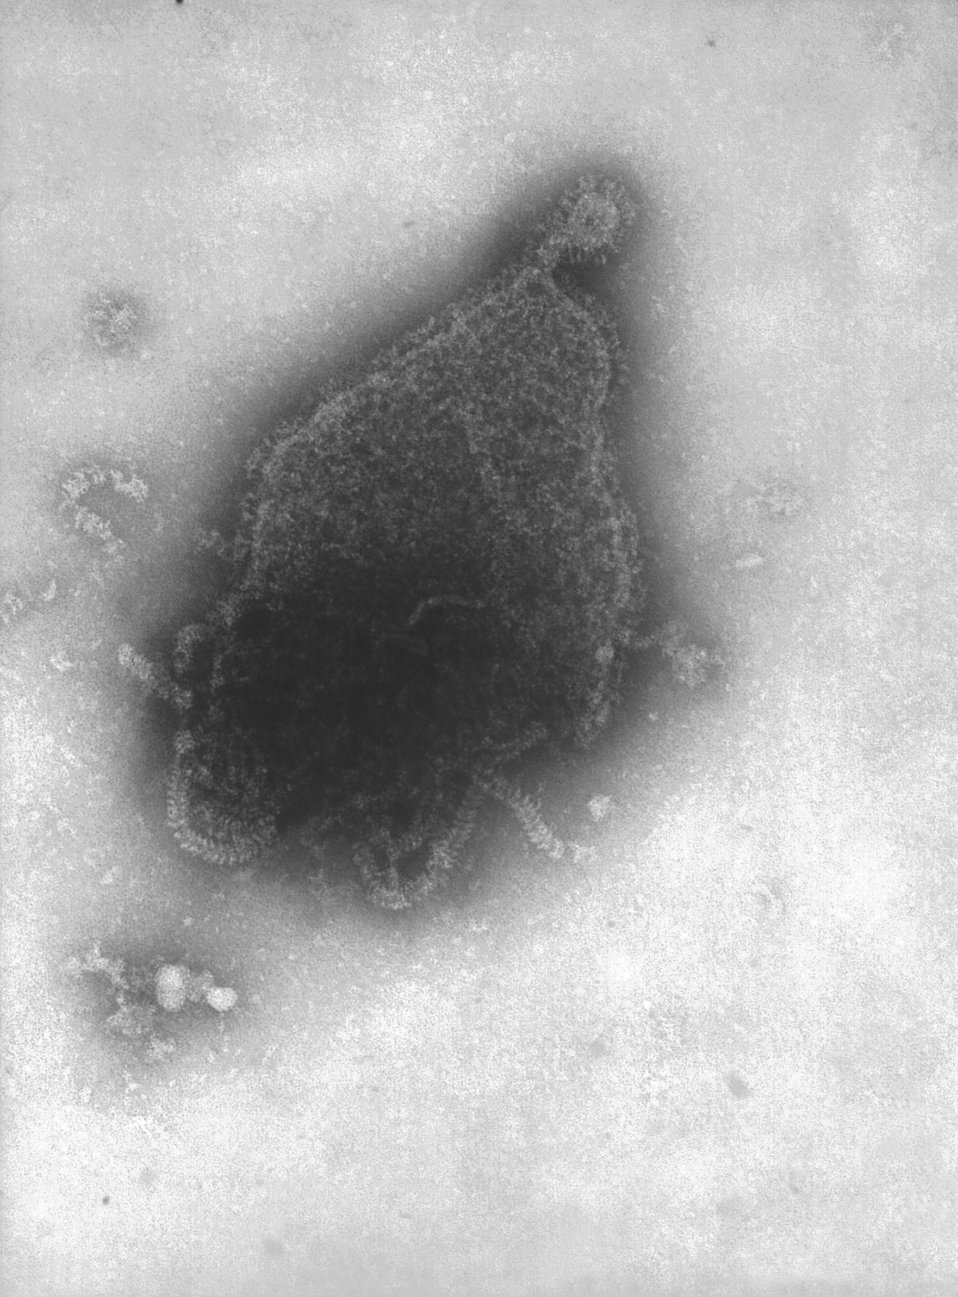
This transmission electron micrograph (TEM) revealed the presence of the human parainfluenza type 4A virus (HPIV-4A), which like the mumps virus, is also a Paramyxoviridae family member, and a member of the genus, Rubulavirus.